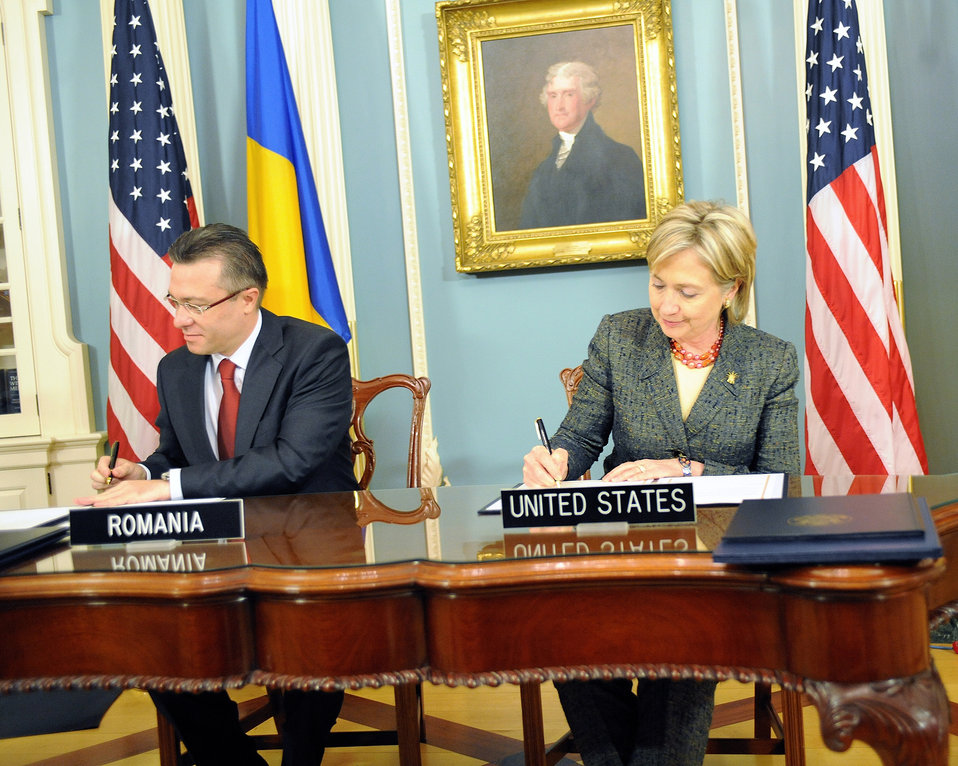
Secretary Clinton and Romanian Foreign Minister Sign Agreements

U.S. Secretary of State Hillary Rodham Clinton and Romanian Foreign Minister Cristian Diaconescu deliver remarks during a signing ceremony for the Protocols of Exchange of Instruments of Ratification for the U.S.-Romania Mutual Legal Assistance Protocol and the U.S.-Romania Extradition Treaty at the U.S. Department of State in Washington, DC May 8, 2009.